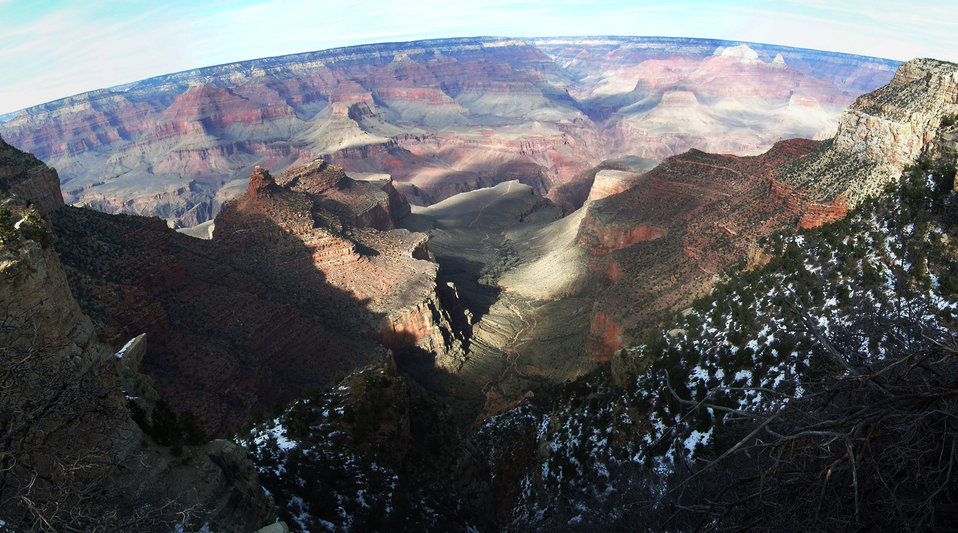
South rim - grand canyon - panorama

Panoramic scenery of the south rim of grand canyon national park, arizona, usa.